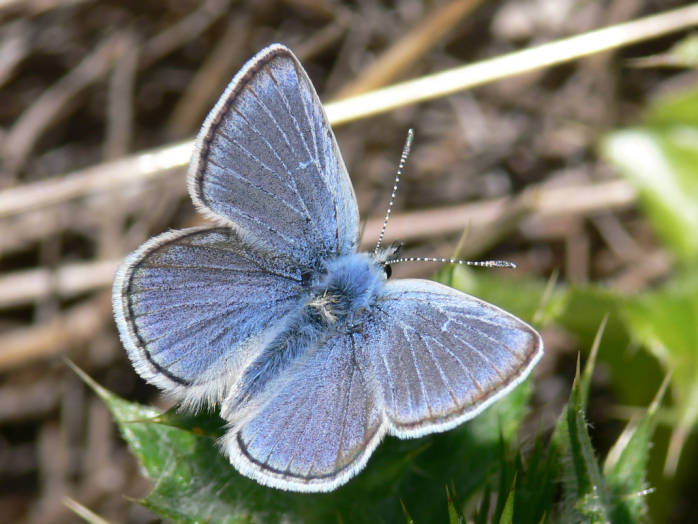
Mission Blue Butterfly (endangered)

Photo credit: Patrick Kobernus

This photo of a male mission blue butterfly was taken on the Southeast ridge of San Bruno Mountain, California. As of 14 December 2009, the 'mission blue butterfly' (Icaricia icarioides missionensis) is listed as Endangered under the U.S. Endangered Species Act.